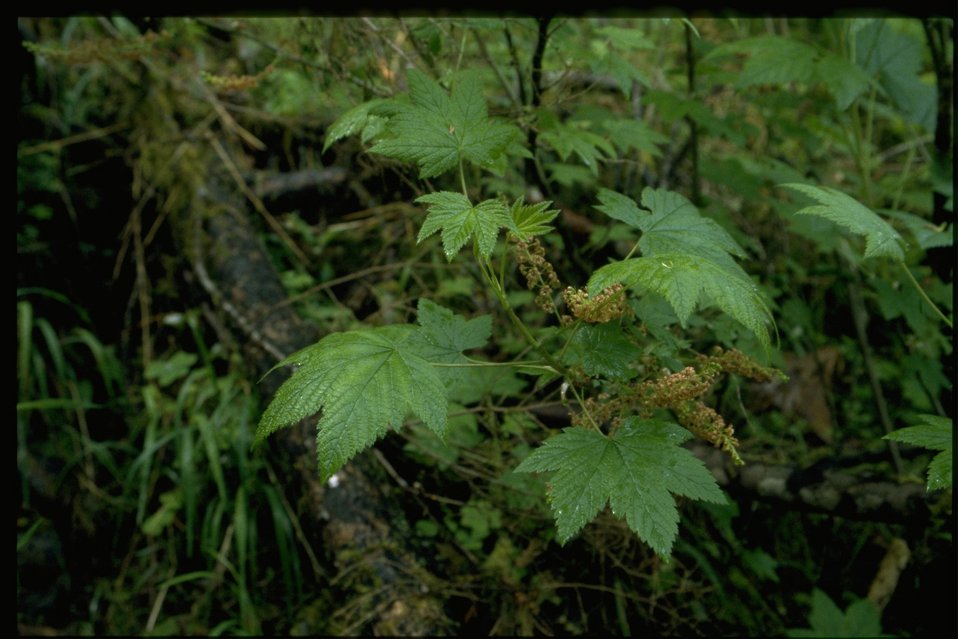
Medium shot of stink currant (Ribes bracteosum).